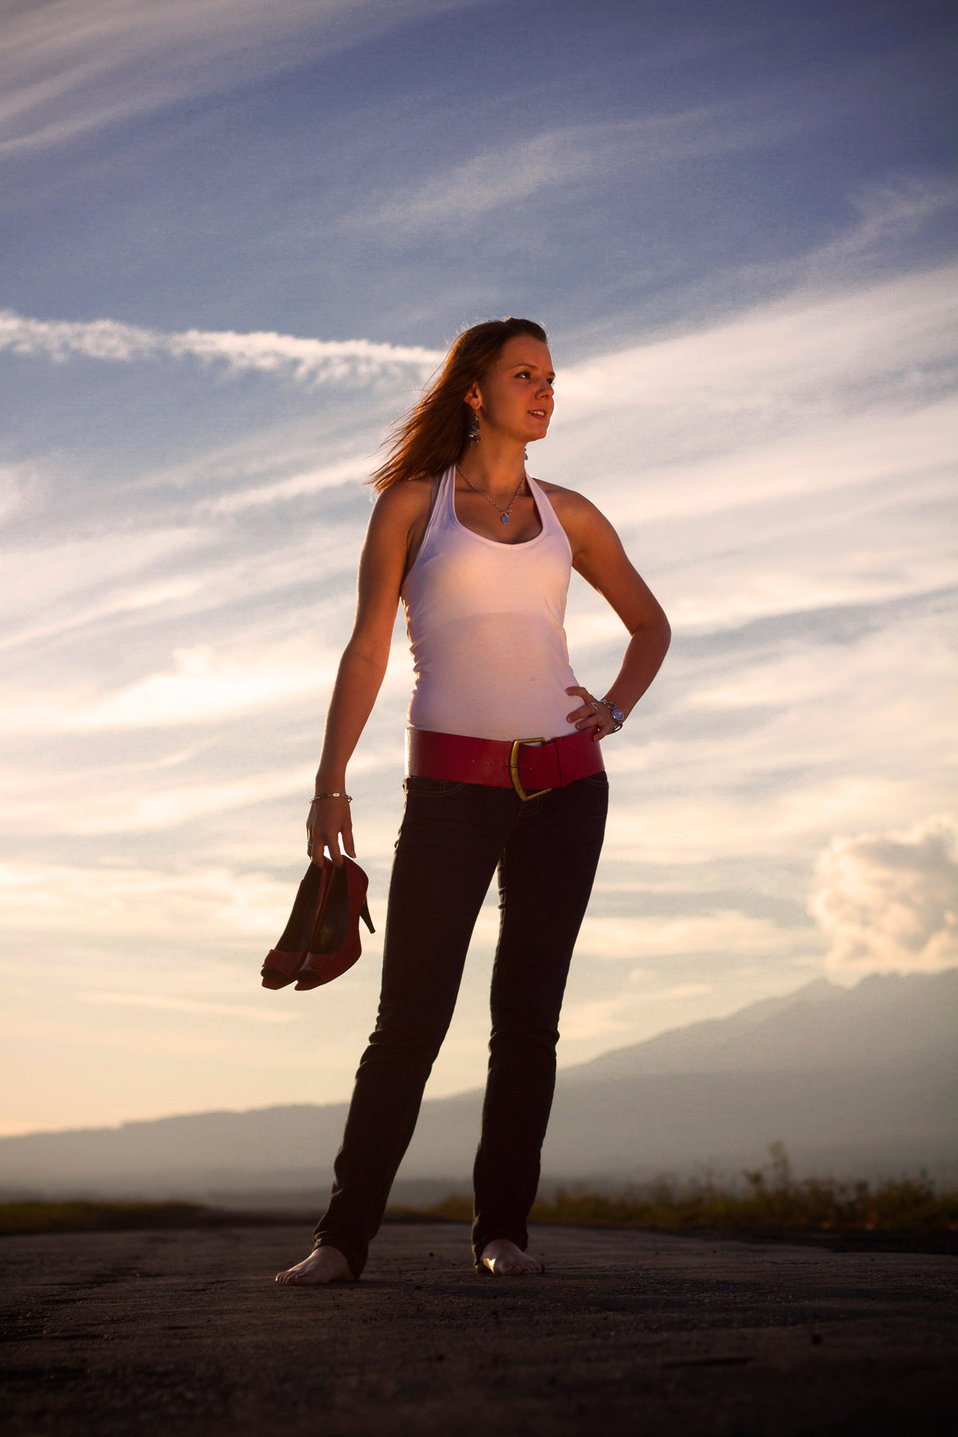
Girl posing.